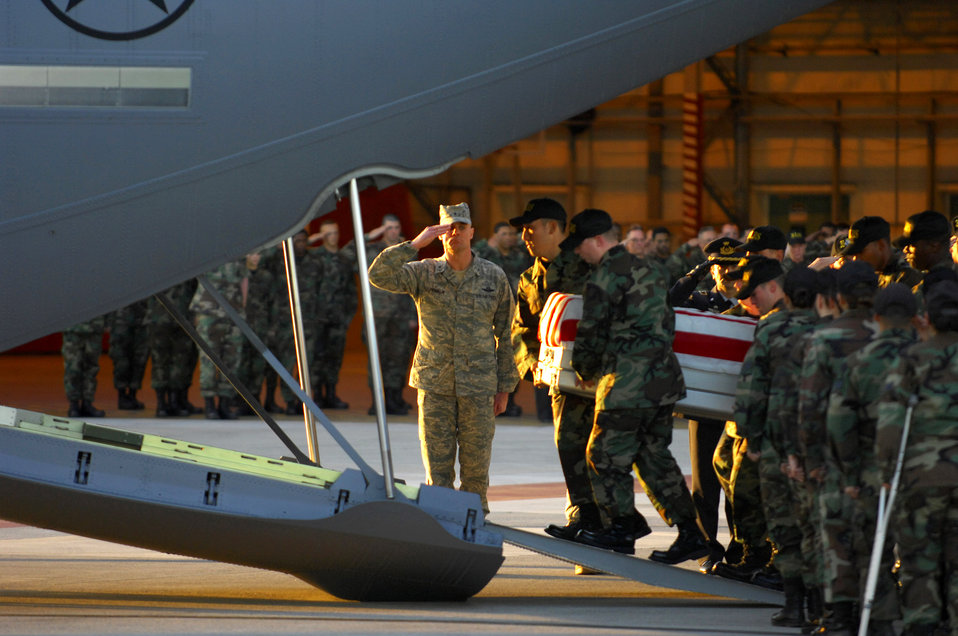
Fallen Airmen, Soldiers honored at Aviano

Brig. Gen. Craig A. Franklin salutes as a fallen Airman is carried onto a C-130 Hercules to be transported back to the United States Nov. 13 at Aviano Air Base, Italy. Airmen and Soldiers from Aviano AB attended the repatriation ceremony for six servicemembers who were killed when an Army UH-60 Black Hawk helicopter attached to the 1st Battalion, 214th Aviation Regiment crashed Nov. 8, 22 miles southwest of Aviano, Italy. General Franklin is the 31st Fighter Wing commander.